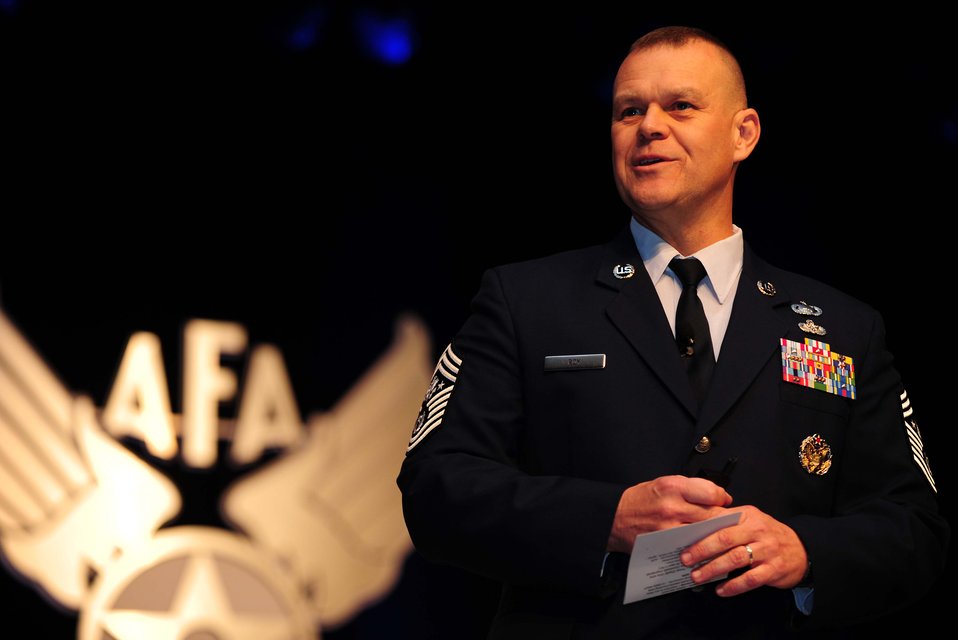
CMSAF shares enlisted perspective

Chief Master Sgt. of the Air Force James A. Roy addresses an audience of Airmen, sister service members and industry partners Sept. 21, 2011, during the Air Force Association’s 2011 Air & Space Conference and Technology Exposition in National Harbor, Md. Roy highlighted issues that are affecting Airmen around the force.